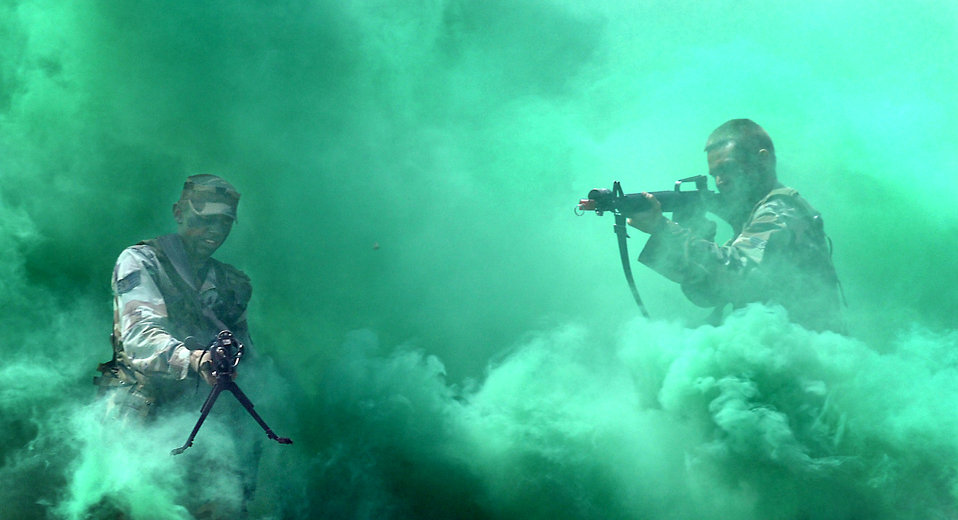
Global Engagement

Staff Sgt. Jeremiah Johnson, left, fires an M-240 weapon while Senior Airman Arthur Sgruggs fires an M-16 July 13 during Global Engagement, a summer course at the U.S. Air Force Academy in Colorado Springs, Colo. Global Engagement teaches cadets the expeditionary Air Force concept of deploying, establishing a bare-base operation, executing their mission, defending their base and re-deploying home.